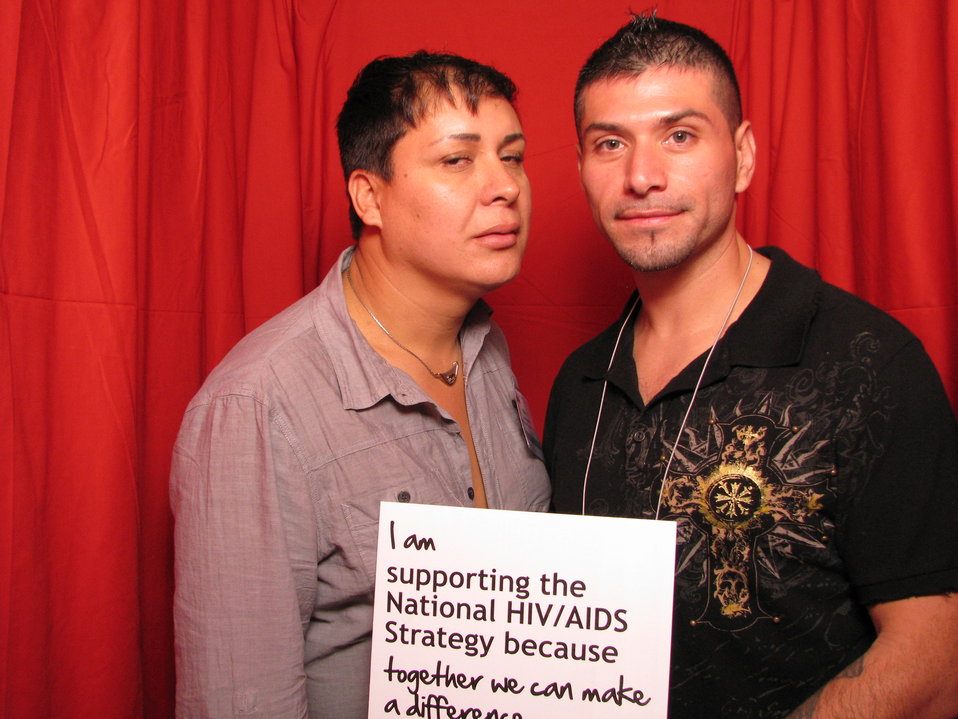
I am supporting the National HIV/AIDS Strategy because together we can make a difference.

From the AIDS.gov photo booth at the U.S. Conference on AIDS, September 2010 (Orlando, FL).